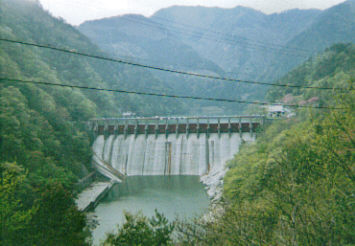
Dam